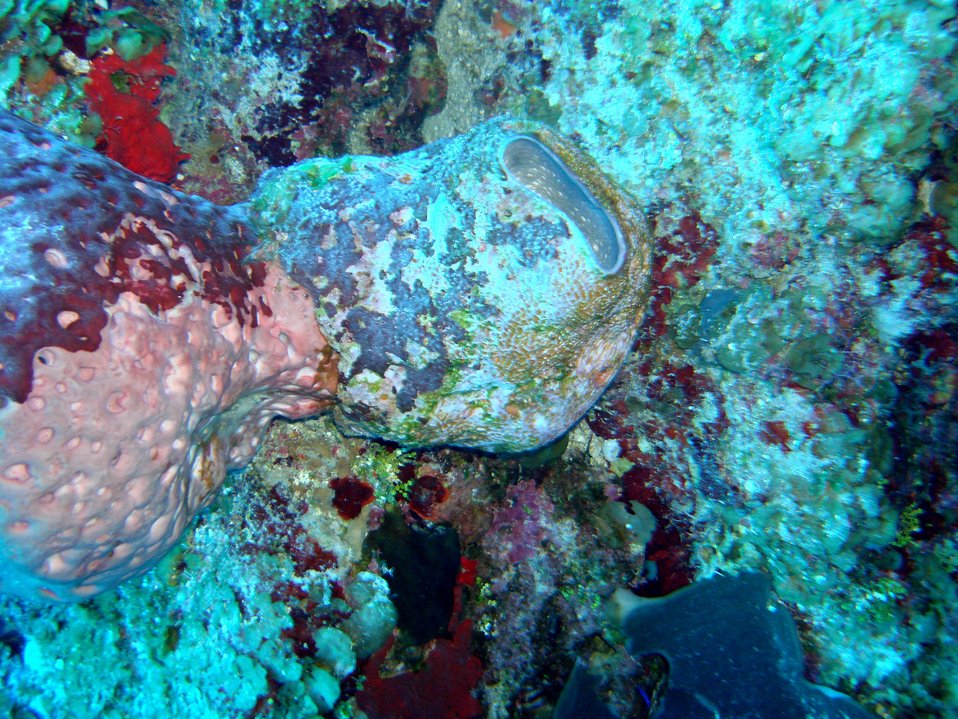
Sponge (Ircinia sp.)